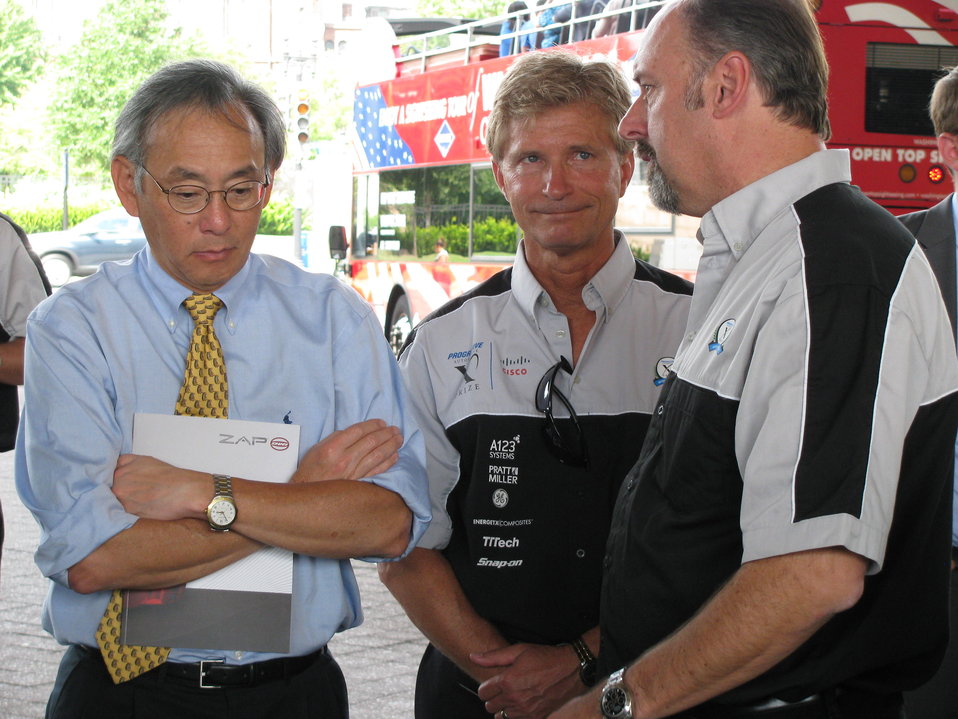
X Prize 053